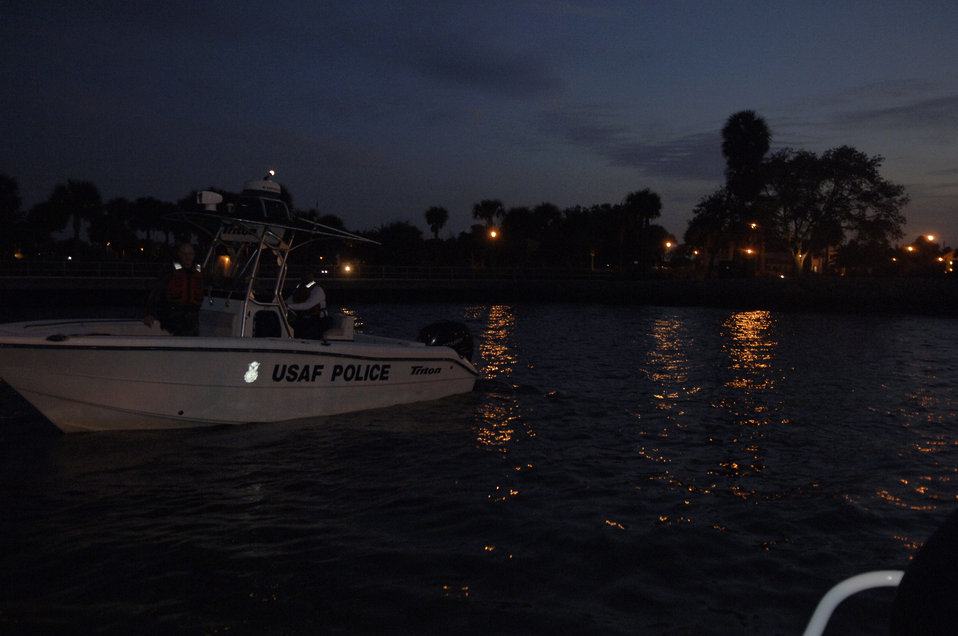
Bay watch

Members from the 6th Security Forces Squadron boat patrol at MacDill Air Force Base, Fla., prepare to dock Nov. 27 after patrolling Tampa Bay. The 6th SFS is one of the few security forces squadrons in the Air Force to have a boat patrol and the only one to patrol overnight.